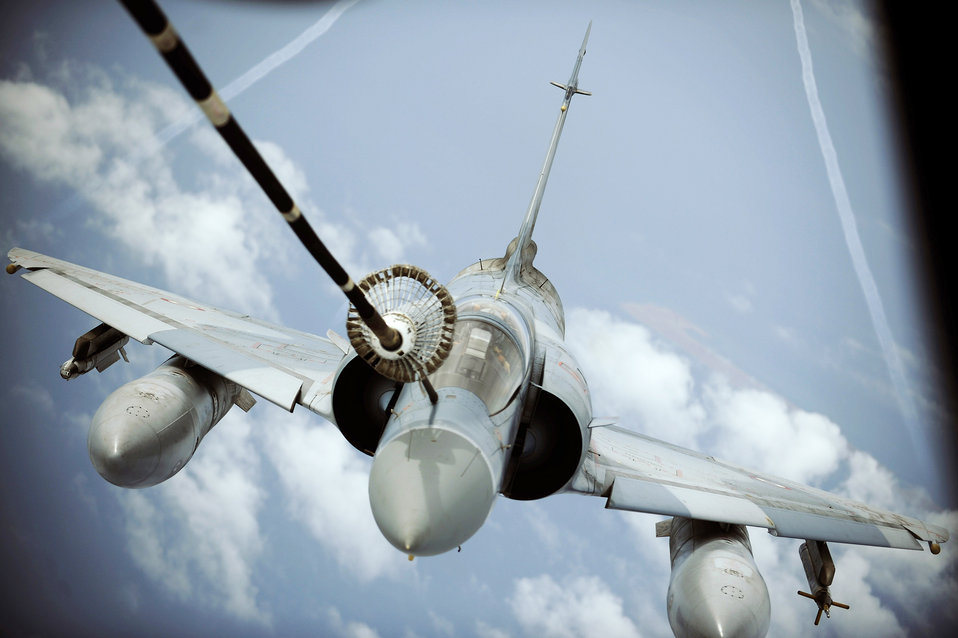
Airmen create partnerships in multinational exercise

A French Mirage 2000 is refueled by a 908th Expeditionary Air Refueling Squadron KC-10A Extender during a multinational exercise, Dec. 6, 2009, in Southwest Asia. Aircrews from France, Jordan, Pakistan, the U.K., and the U.S. trained together in the U.S. Air Forces Central area of responsibility in fighting a large-scale air war.